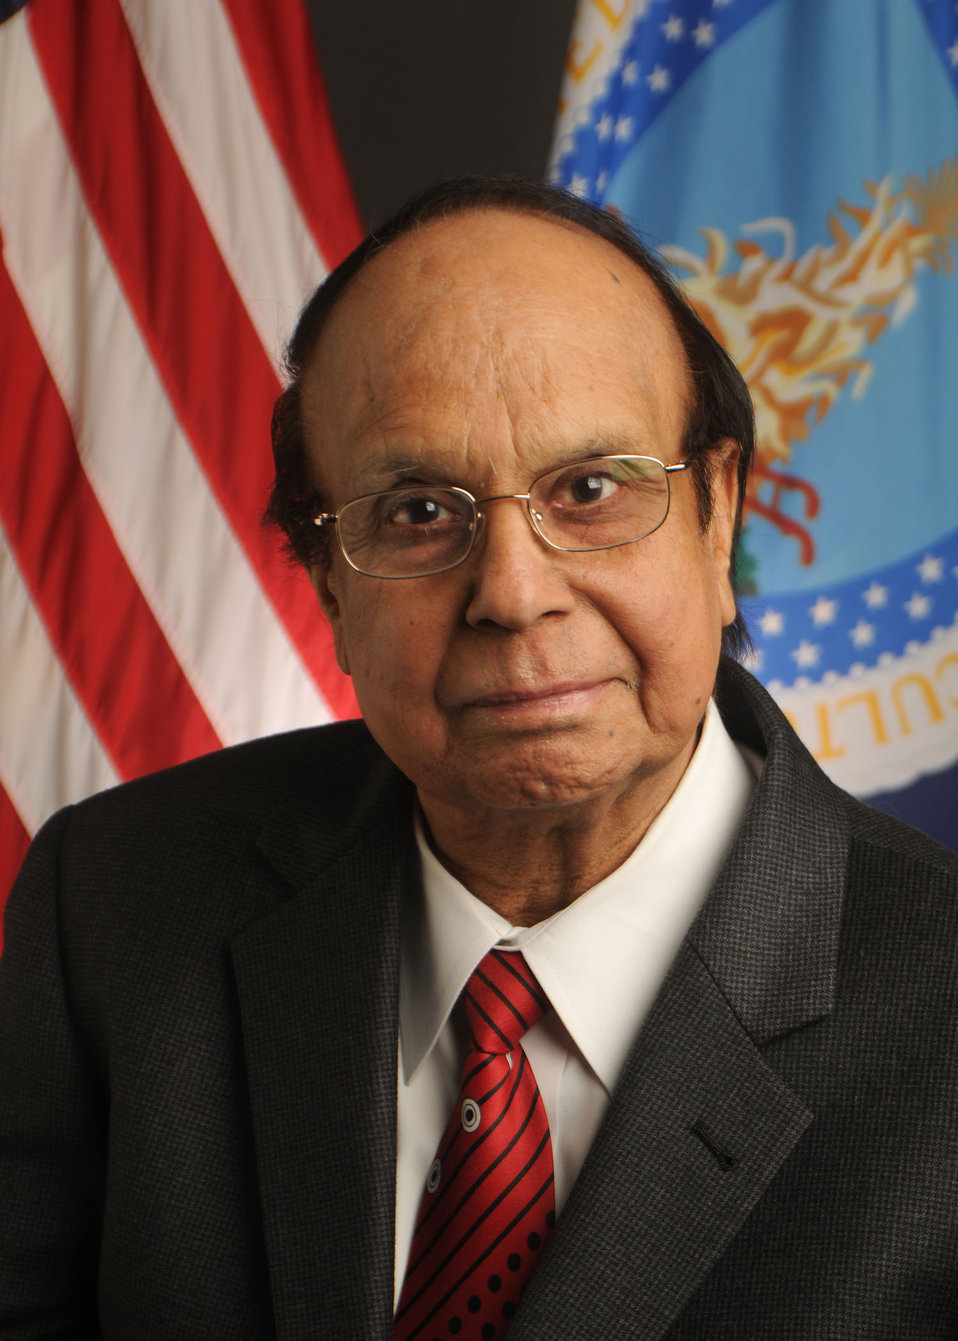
10di1121 Executive Director for Nutrition Policy and Promotion Dr. Rajen Anand

Portrait of Dr.Rajen Anand, Executive Director, CNPP.